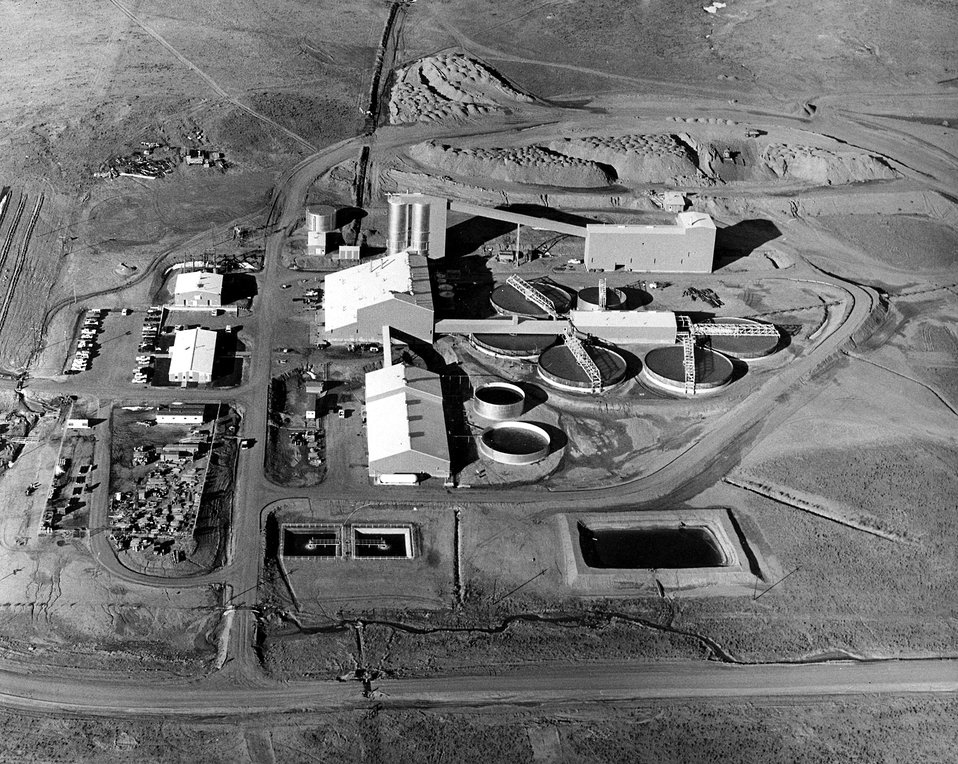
Aerial view of Humble Oil & Refining Company's Highland Uranium Mill near Casper, Wyoming, for which an interim license was issued in the fall of 1972 pending completion of full environmental review. c. 1973